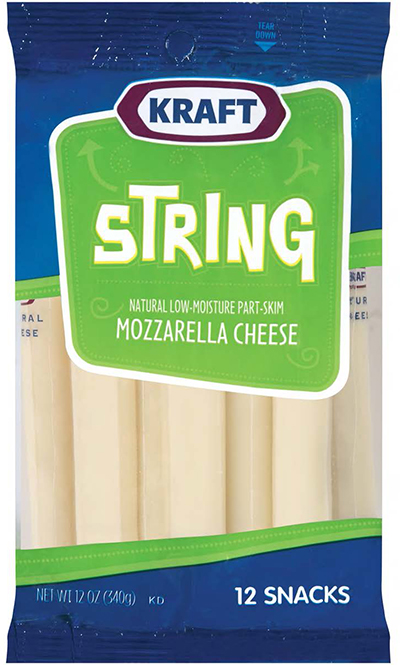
RECALLED – Cheese

October 25, 2013 – Product Recall – Kraft Voluntarily Recalls Some Varieties of Kraft And Polly-O String Cheese And String Cheese Twists Due to Premature Spoilage.